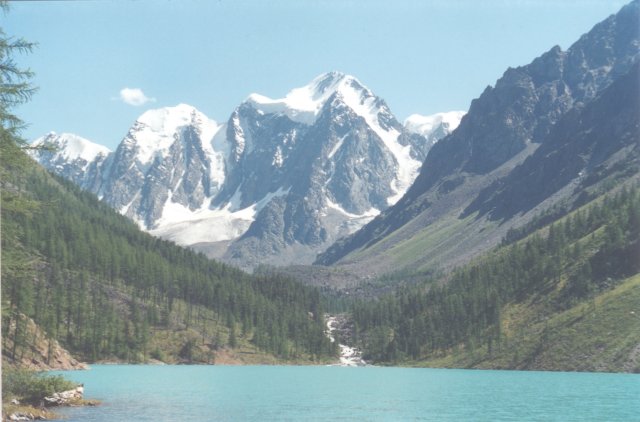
080 shavlo